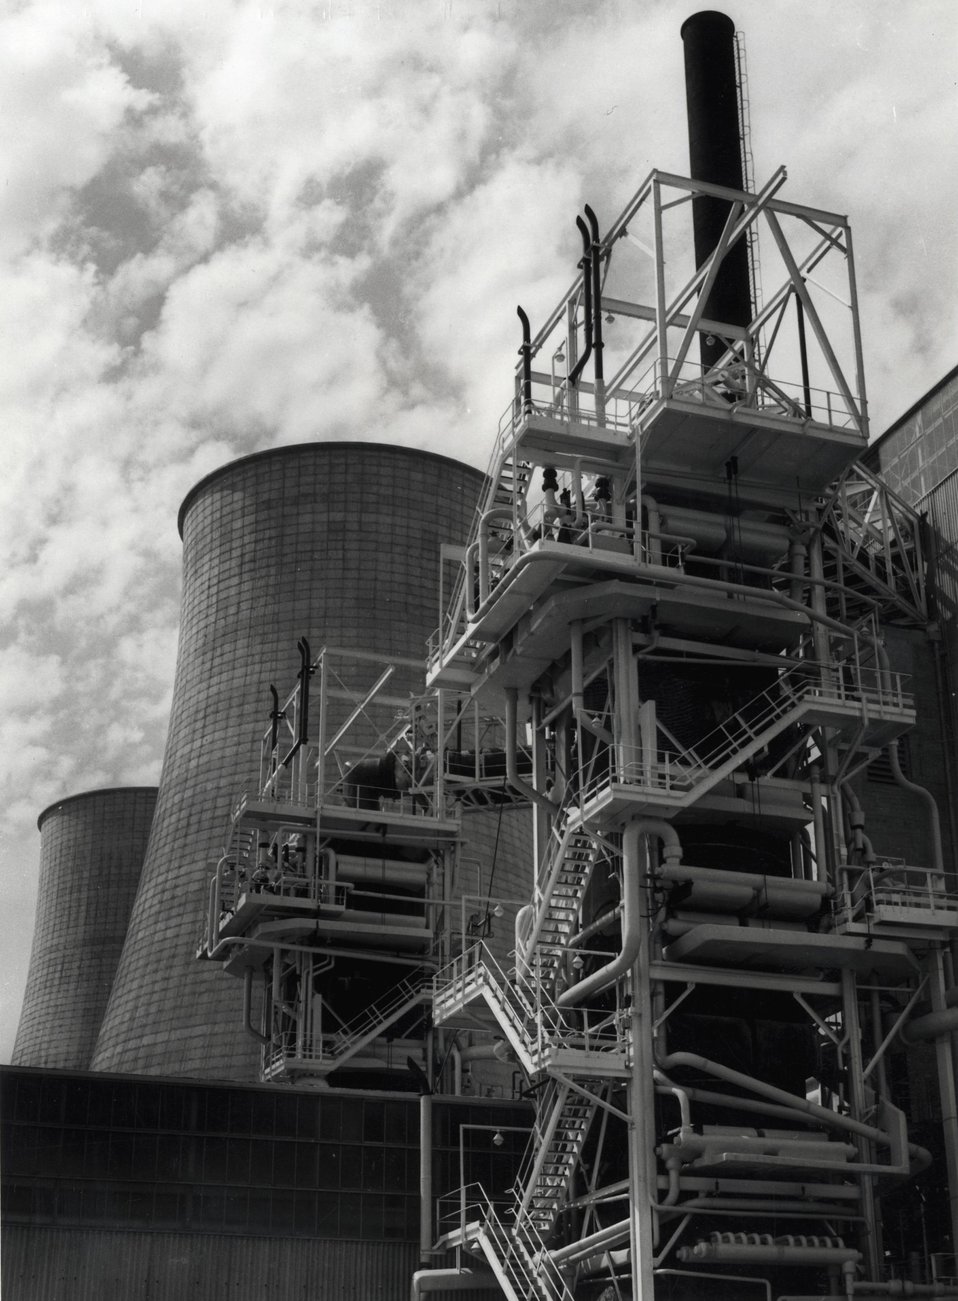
Calder Hall power station nearing completion. c. 1956